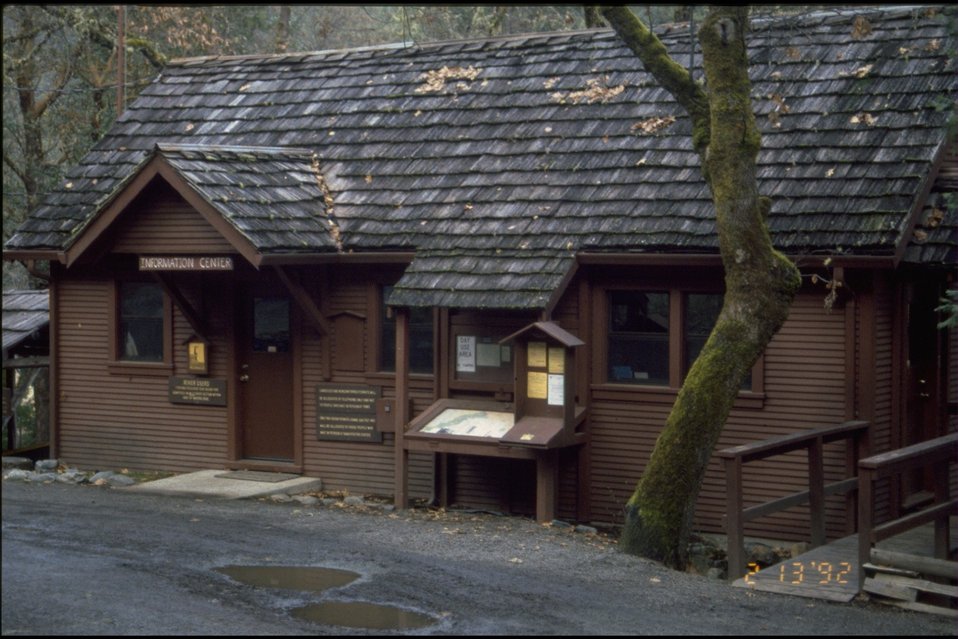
Smullin Visitor Center at Rand.